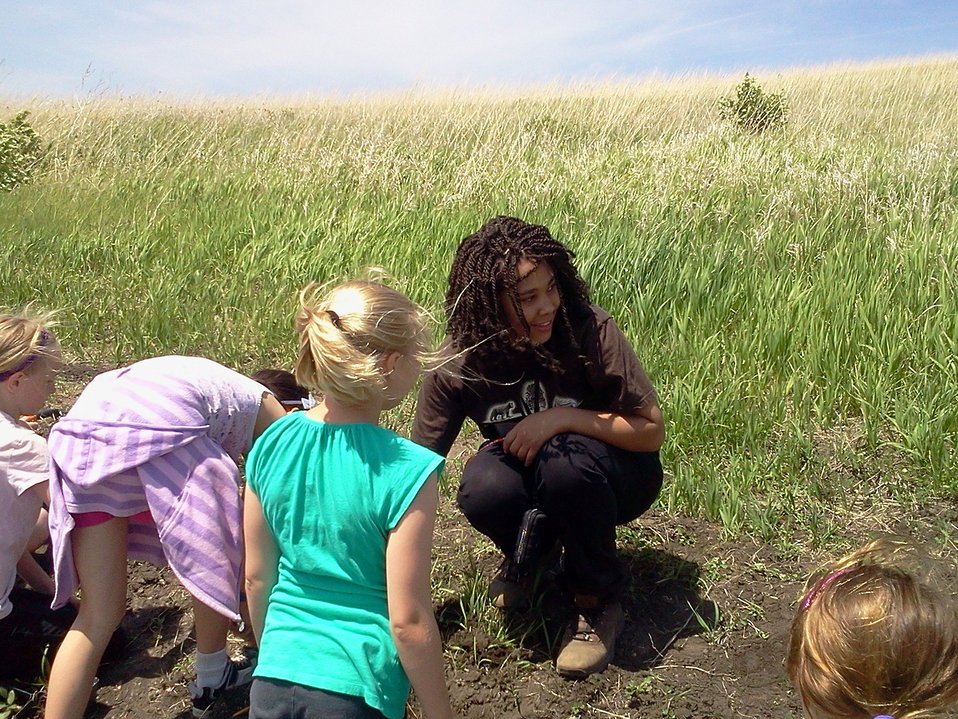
CDIP 2012 Fergus Falls

Jessica, planting with 4th Grade